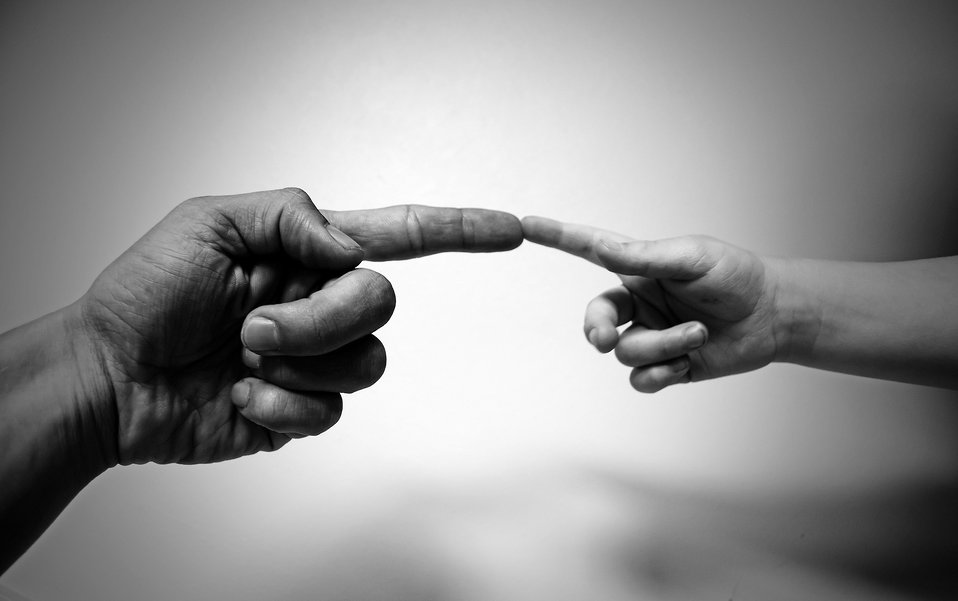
Hands

Two hands - background.